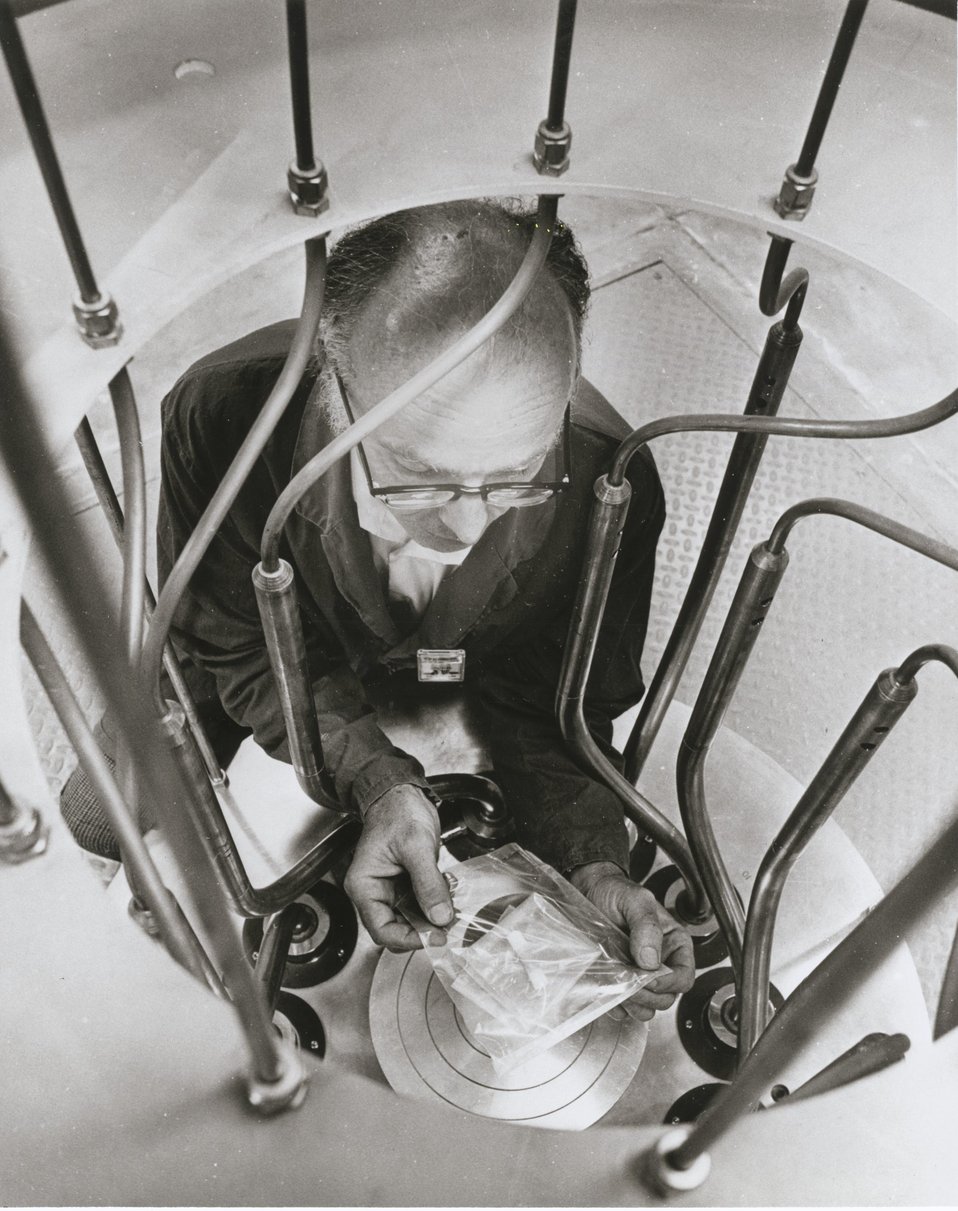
The AEC's Life Sciences Laboratory at Pacific Northwest Laboratory provides one of the largest and most versatile cobalt-60 sources in the Northwest.